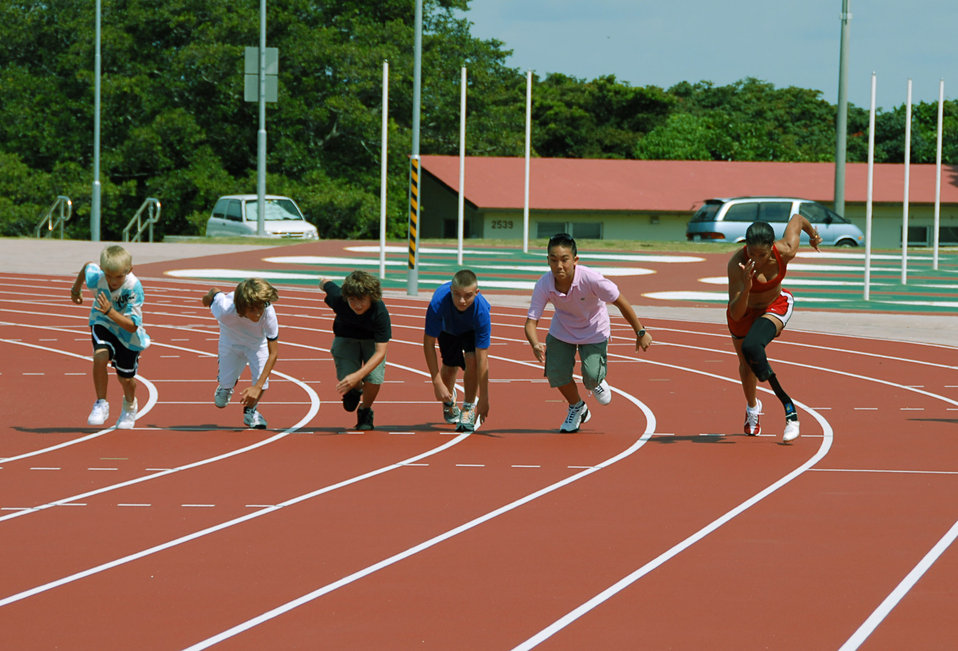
Paralympic athletes train at Kadena

Paralympian April Holmes of Chula Vista, Calif., races students Aug. 26 at Ryukyu Middle School on Kadena Air Base, Japan. Holmes is the world record holder in the 100-, 200- and 400-meter dashes. More than 100 athletes and support staff from the U.S. Paralympics track and field and swim teams arrived on Kadena AB Aug. 24 to live and train for the next ten days in preparation for the 2008 Paralympic Games being held in Beijing, China, Sept. 6.